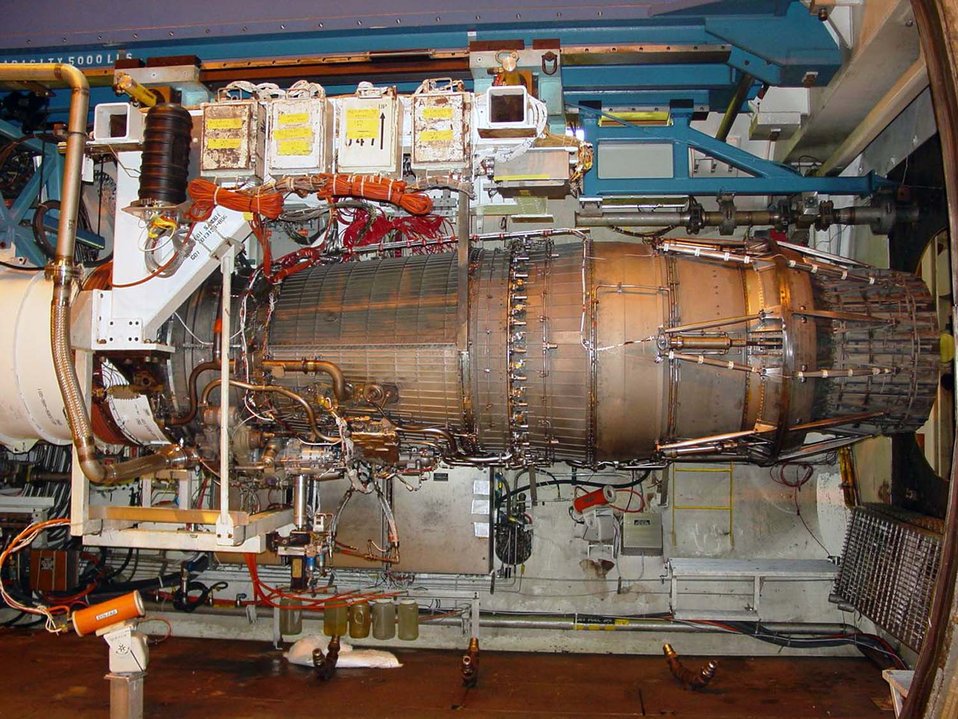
Arnold contributes to first supersonic flight using synthetic fuel

A General Electric F101 engine serves as the power plant for the B-1B Lancer. The engine has undergone a variety of altitude tests in Arnold Engineering Development Center's aero-propulsion J-1 test cell.